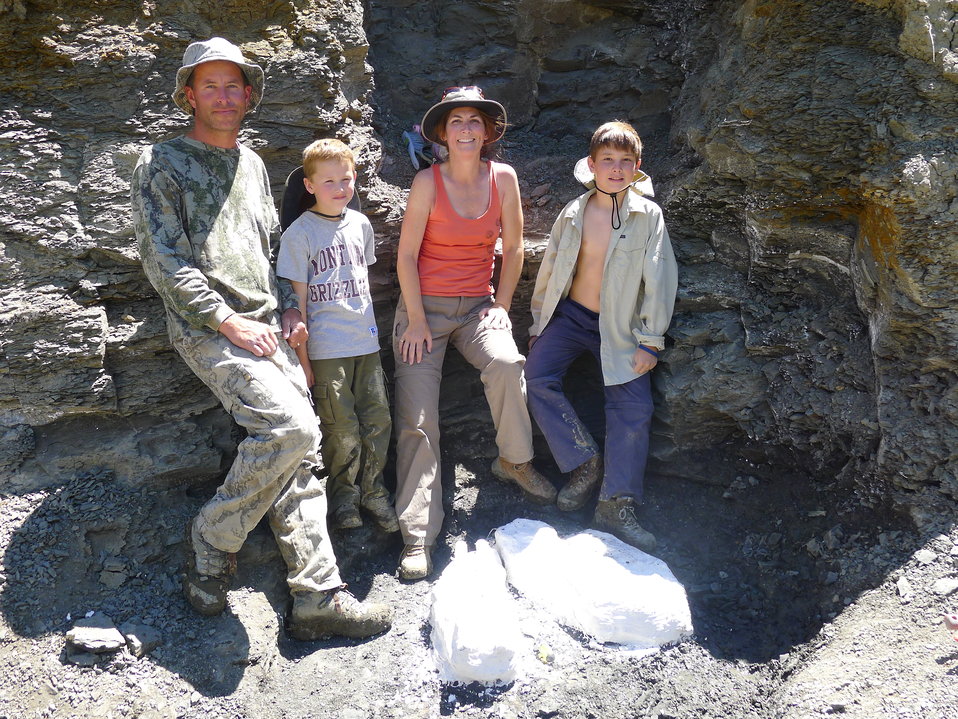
The Bradt Family Shares the Experience

David Bradt and his family (left to right: Kellen, Jolene, and Garrison) with the plaster jacketed neck and skull of the plesiosaur at their feet.